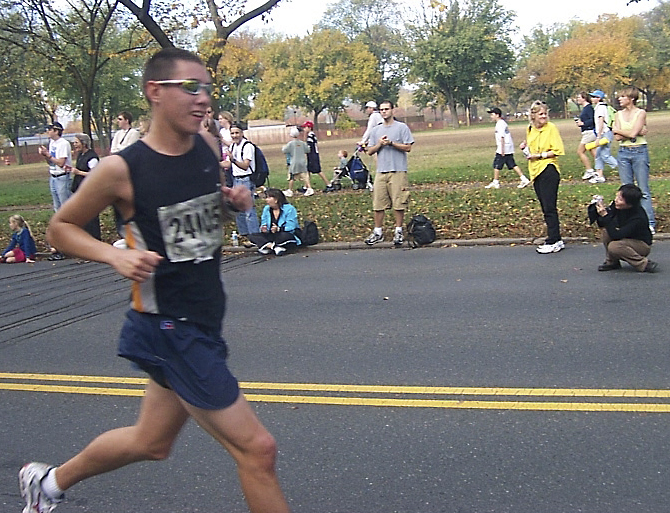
ROTC cadets use marathon to reinforce core values

ARLINGTON, Va. -- Air Force ROTC Cadet Tim Kogge runs during the Marine Corps Marathon. Nine University of Notre Dame cadets from Air Force ROTC Detachment 225 traveled here from Indiana for the race.